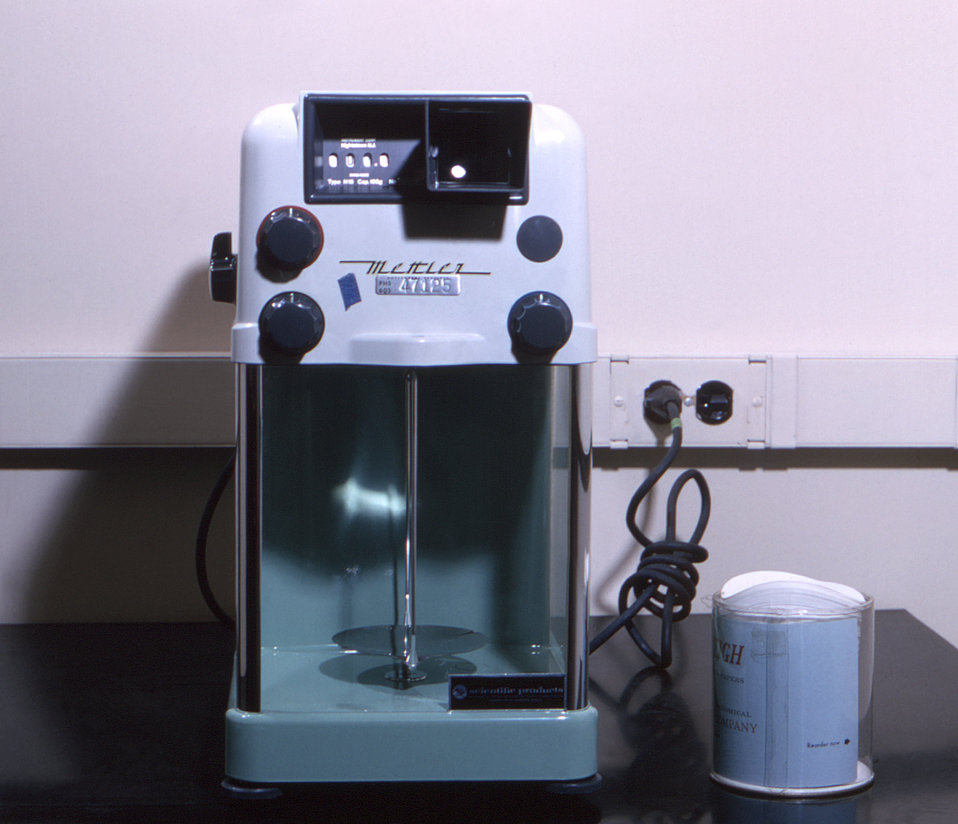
This historic image from 1964 depicts a Mettler single-pan analytical balance. Introduced in 1946 by its creator, Erhard Mettler, the single-pan design proved to be faster than its more common cousin the two-pan equal-arm balance.